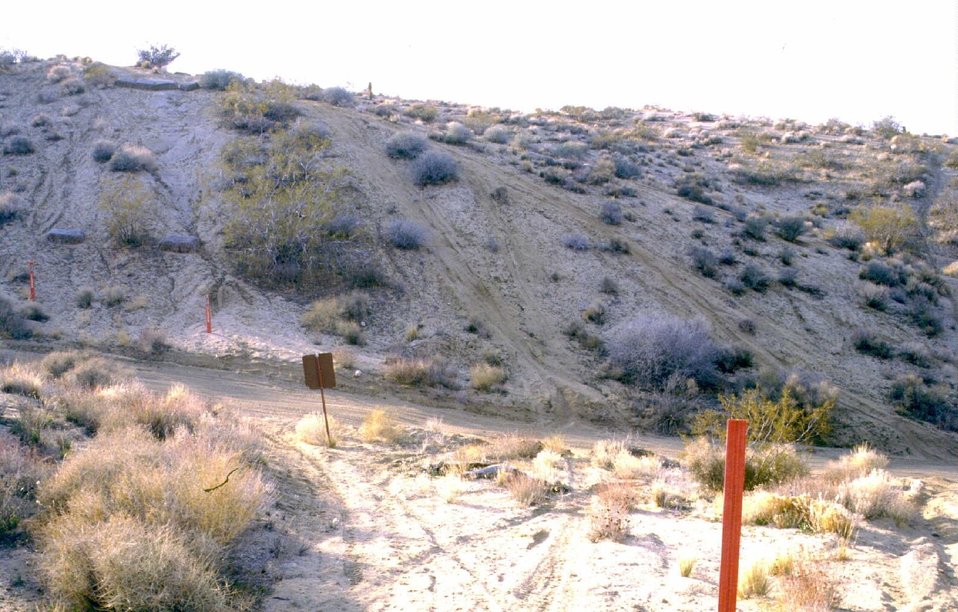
Goes with New 4; Ongoing damage to hillsides. Here all red route and closed area signs are being ignored